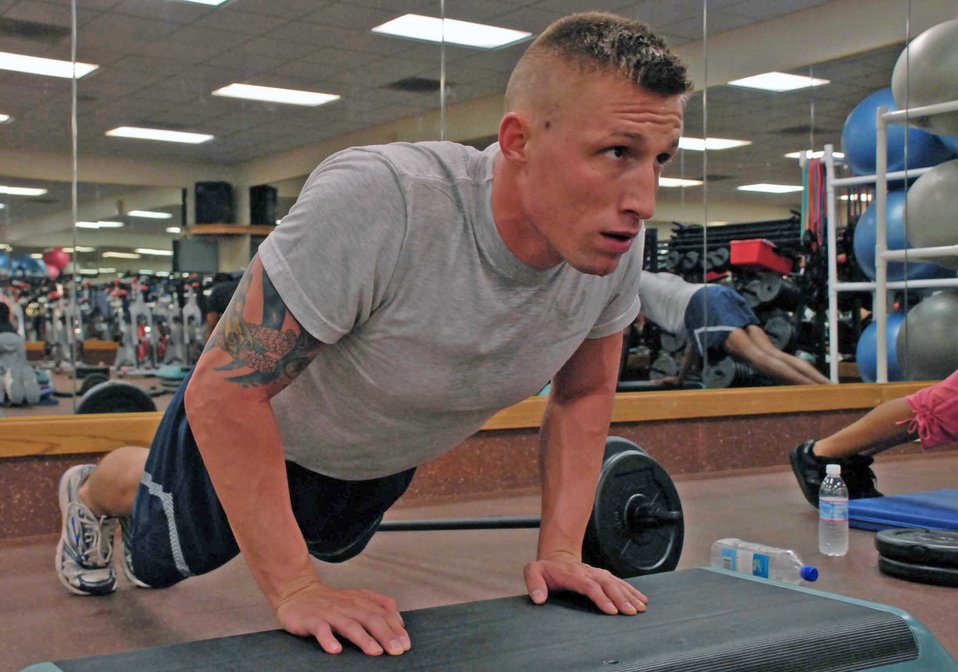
Beale AFB first to incorporate Body Pump in fitness program

Airman 1st Class Christopher McDowell works out his triceps Aug. 17, 2009, at the fitness center at Beale Air Force Base, Calif. Airman McDowell is one of the certified instructors for the new Body Pump program recently implemented to promote fitness at Beale.